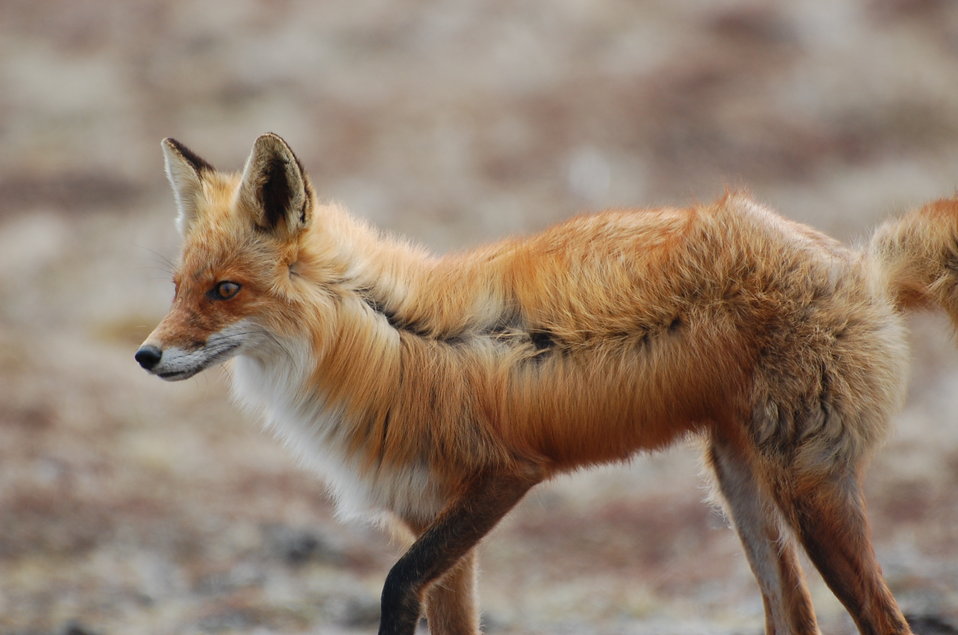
Red Fox

near Kinzarof Lagoon, Izembek National Wildlife Refuge